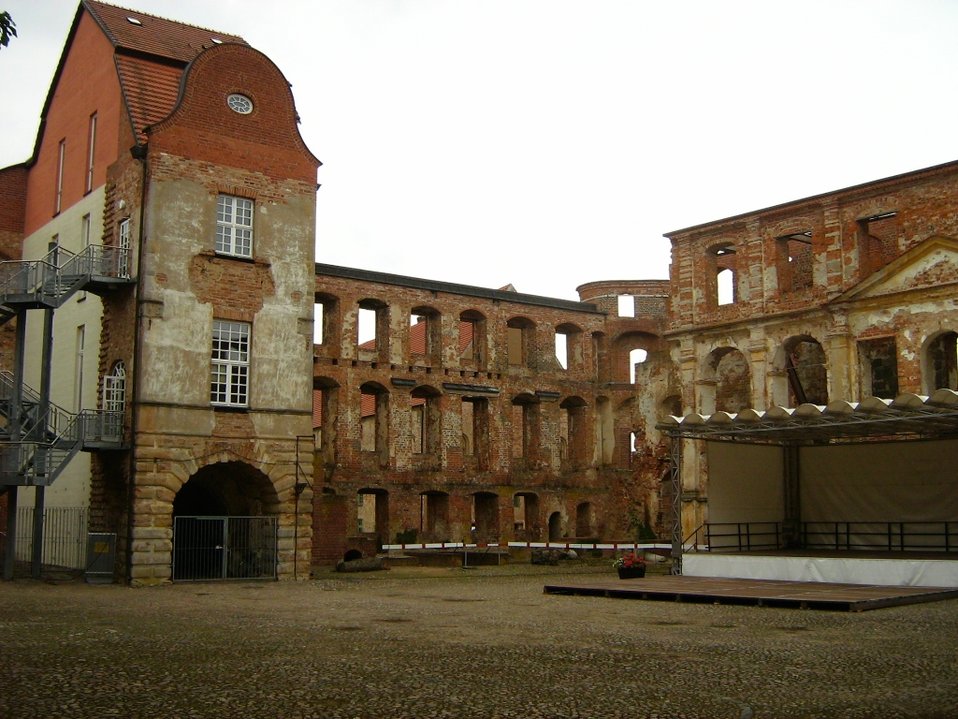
Deutsch: Der Innenhof des Schlosses und Klosters in Dargun (Mecklenburg, Landkreis Nordvommern).